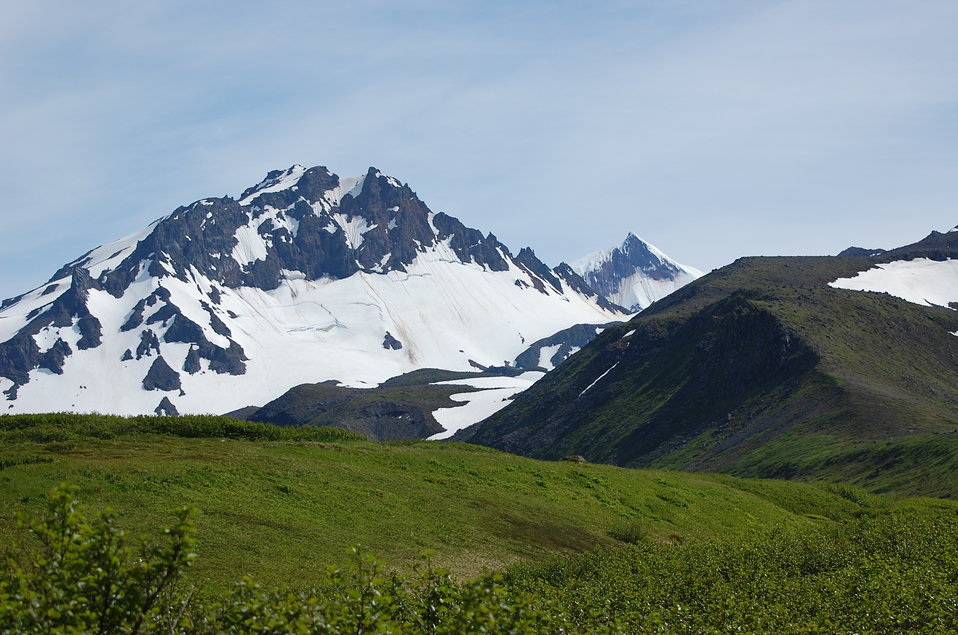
Frosty Peak

Izembek National Wildlife Refuge